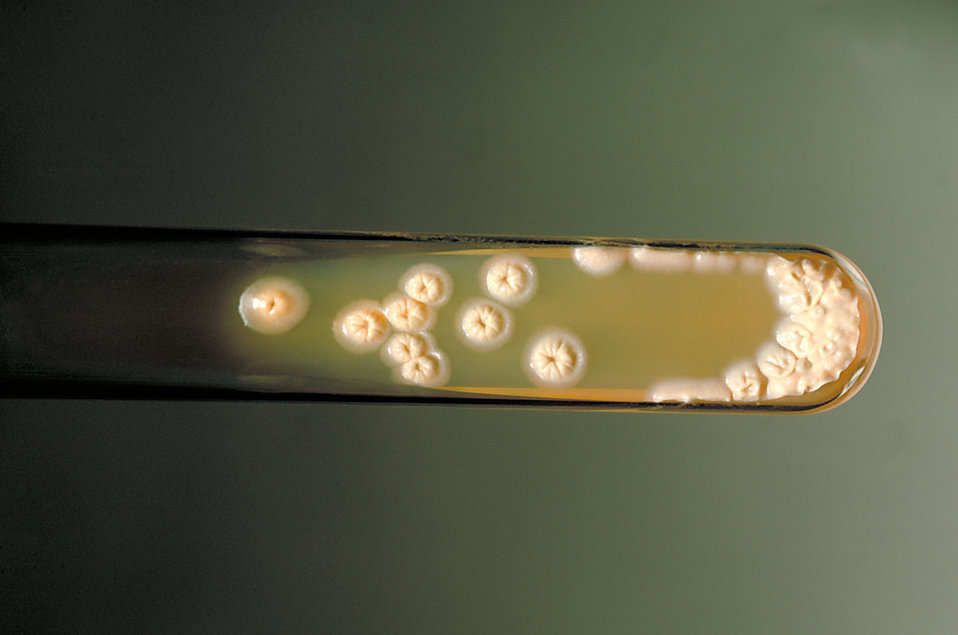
This is a SABHI agar slant culture of the fungus Sporothrix schenckii at 37�C.